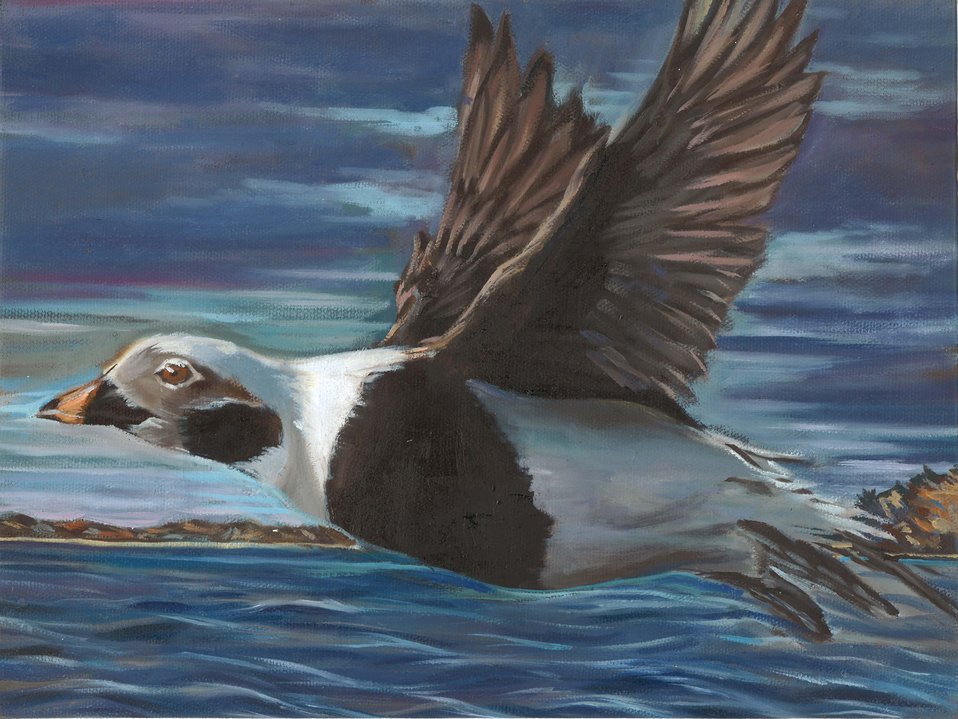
Texas

2012 Jr Duck Stamp Program
State Best of Show
Texas